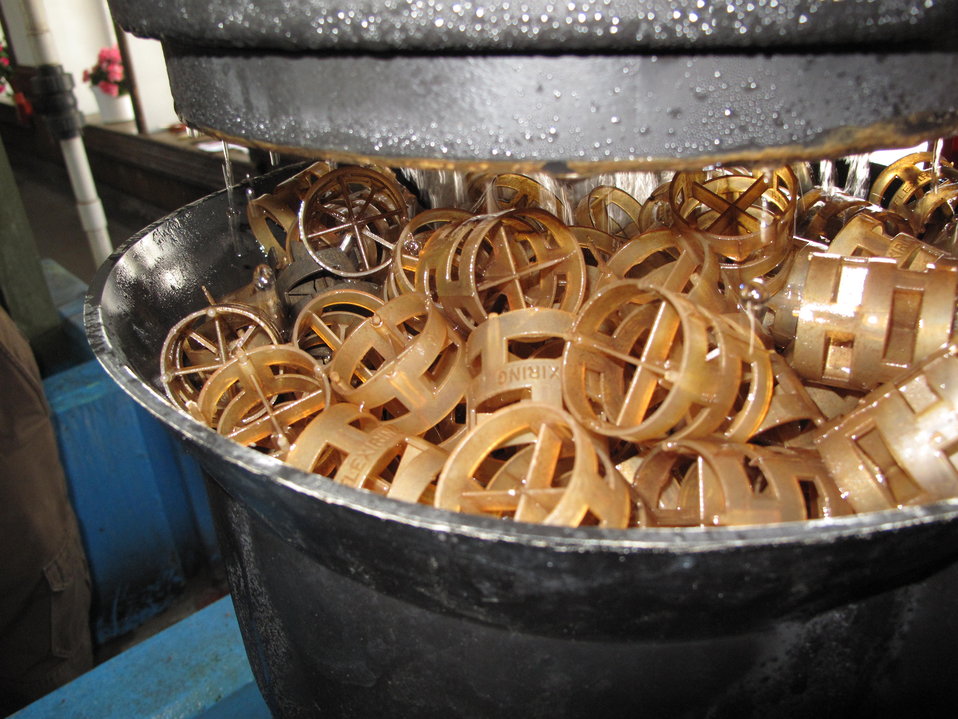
Leadville National Fish Hatchery

These brown spirals, called Knoch rings, relase nitrogen when agitated water passes over them. A very specific nitrogen contentis necessary for the health and survivial of the fish.